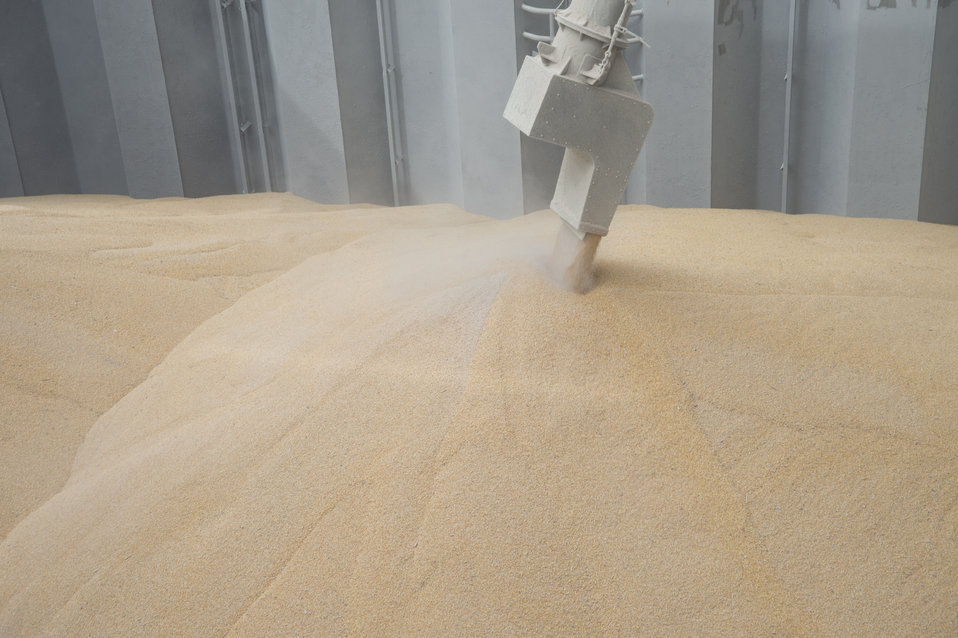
Grain is transferred from barges to storage facilities near the Port of New Orleans in New Orleans, LA on Tuesday, Nov. 19, 2013.